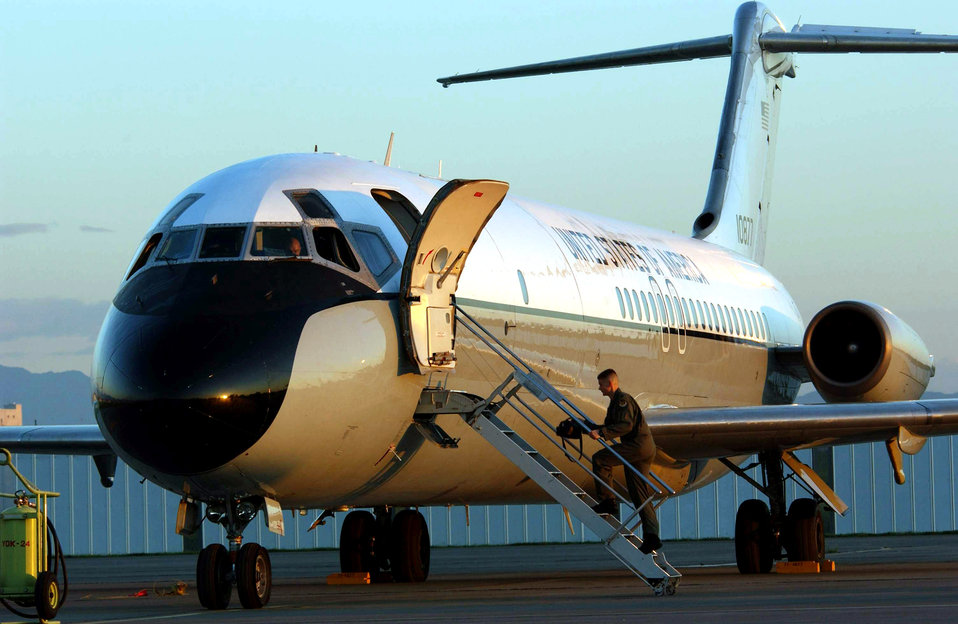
Bye bye birdie

YOKOTA AIR BASE, Japan -- First Lt. Allen Specht boards his C-9 Nightingale for the final time Sept. 14. Specht is assigned to the 30th Airlift Squadron here. The Nightingale, which served as the premier medical-evacuation aircraft for the Air Force for 35 years, was retired in July and taken to the